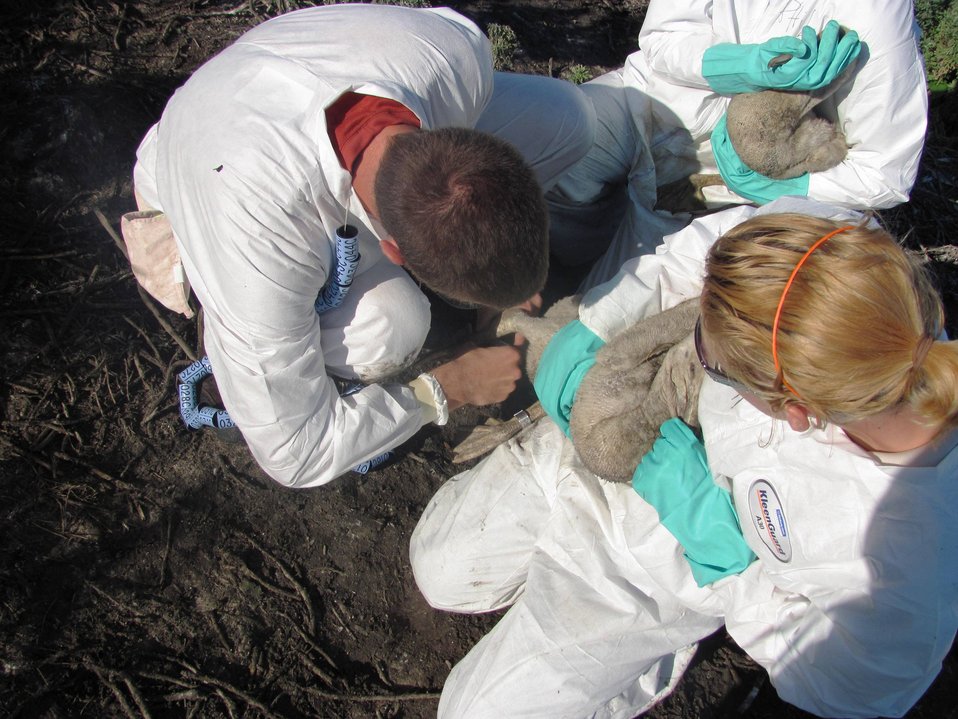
USFWS Staff Banding

This year (2012) 62 staff from the U.S. Geological Survey (USGS), Northern Prairie Wildlife Research Center (NPWRC), U.S. Fish and Wildlife Service (USFWS), Youth Conservation Corps (YCC), Minnesota Conservation Corps (MCC), and Student Conservation Association (SCA) banded 1,163 juvenile American White Pelicans at Chase Lake National Wildlife Refuge.